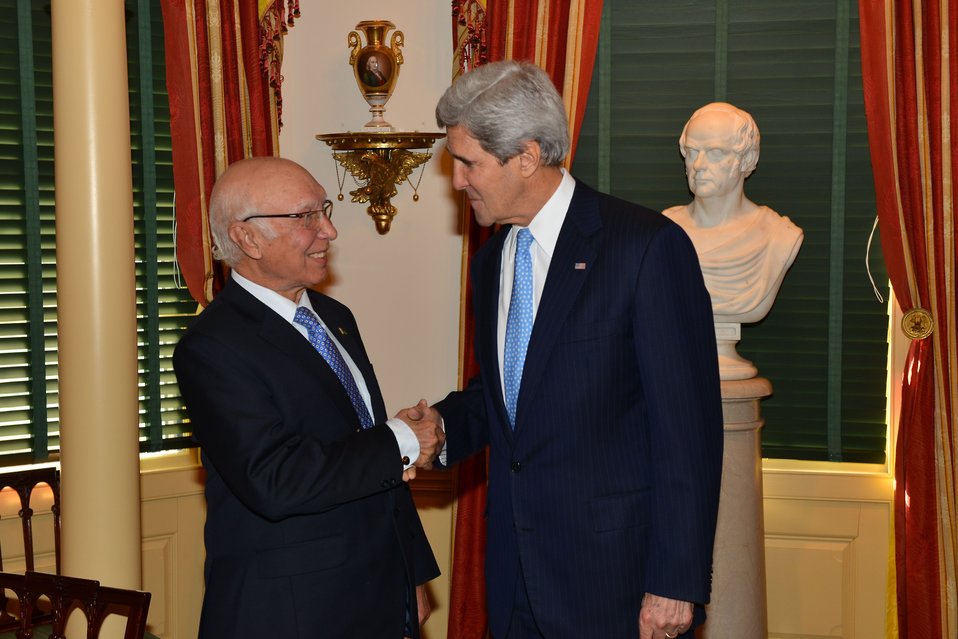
Secretary Kerry Greets Pakistani National Security and Foreign Affairs Advisor Aziz

U.S. Secretary of State John Kerry welcomes Pakistani National Security and Foreign Affairs Advisor Sartaj Aziz to the U.S. Department of State for the U.S.-Pakistan Strategic Dialogue Plenary Session in Washington, D.C., on January 27, 2014.